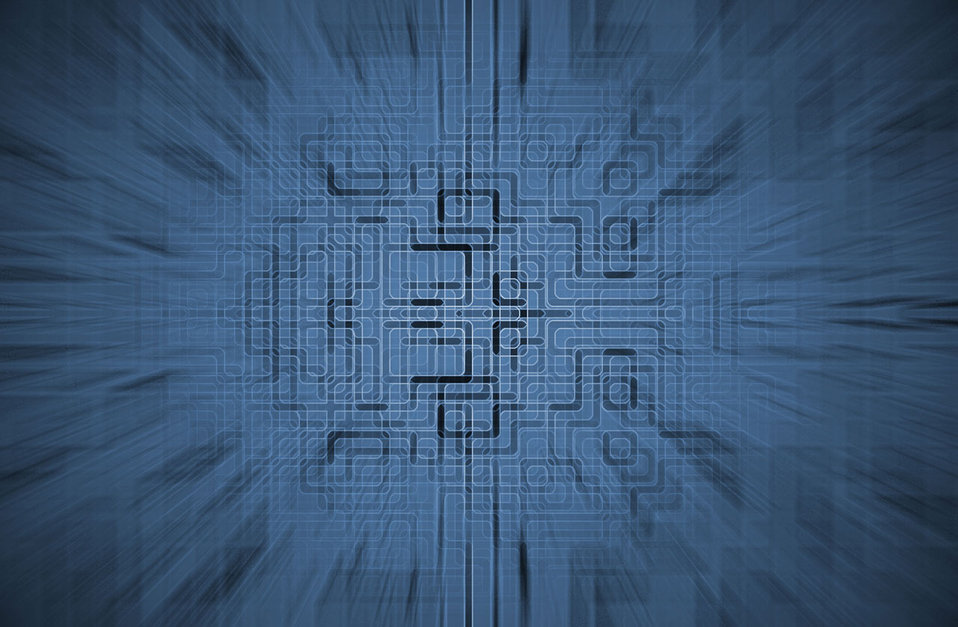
Zoom

Digital background.